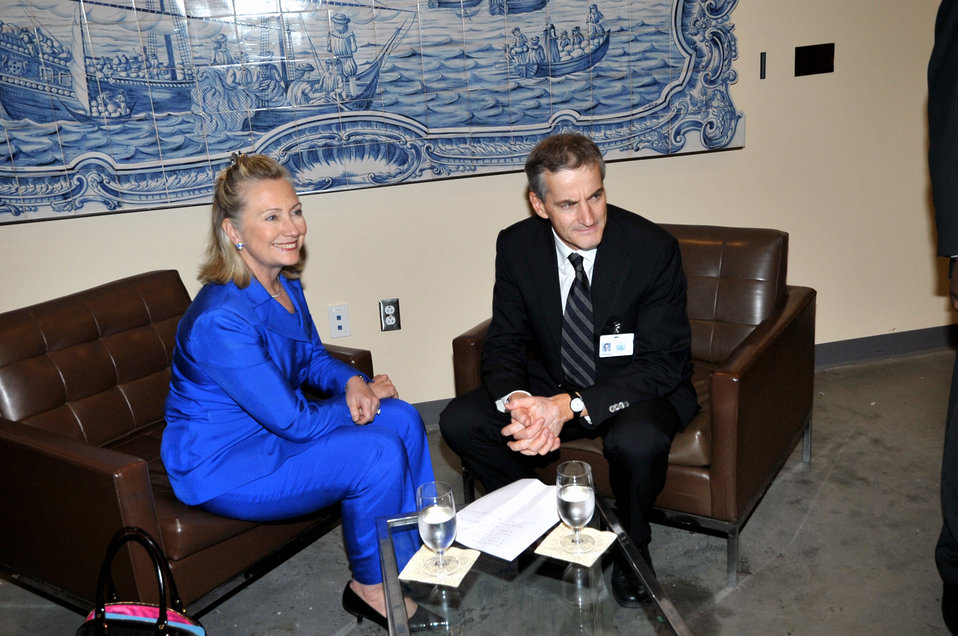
Secretary Clinton Holds a Meeting With Norwegian Foreign Minister Stoereon

U.S. Secretary of State Hillary Rodham Clinton holds a meeting with Norwegian Foreign Minister Jonas Stoereon at the United Nations North Lawn Building in New York, New York, on September 19, 2010.